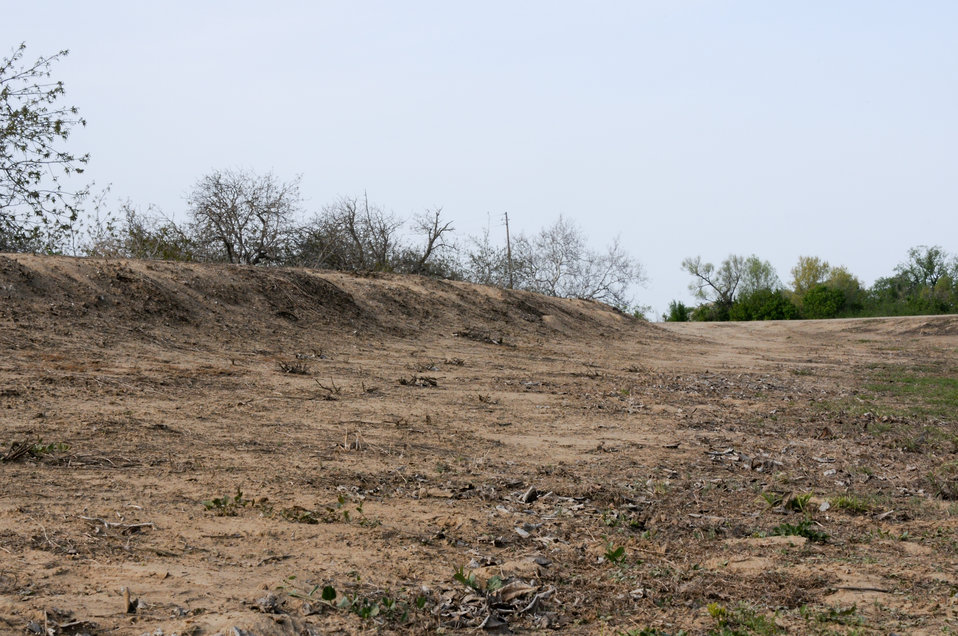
The J-levee (left) severs the connection between the river and floodplain near Hamilton City, Calif., April 14, 2011. “The majority of the old levee will be removed in order to reconnect the river to the natural floodplain, and only areas of the old levee with significant environmental benefits will be left in place,” Corps project manager Tom Karvonen said.